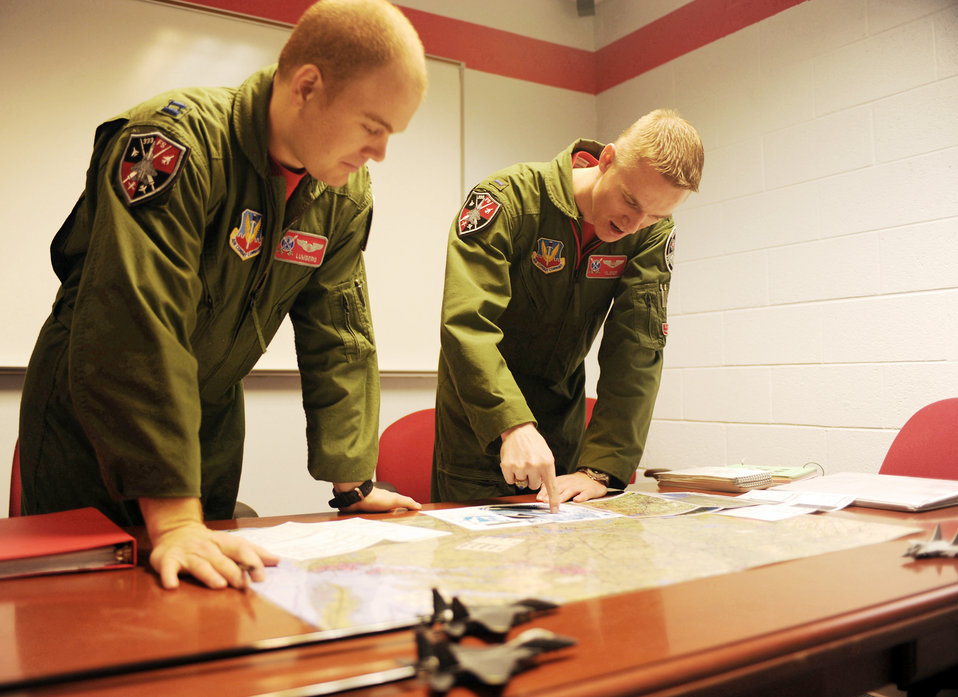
Fledgling eagles learn to fly

1st Lt. Clayton Couch discusses a designation game plan with Capt. Tom Bean for their upcoming flight Feb. 5, 2010, at Seymour Johnson Air Force Base, N.C. Lieutenant Couch is weapons systems officer student and Captain Bean is a student pilot attending the 333rd Fighter Squadron Basic Course.